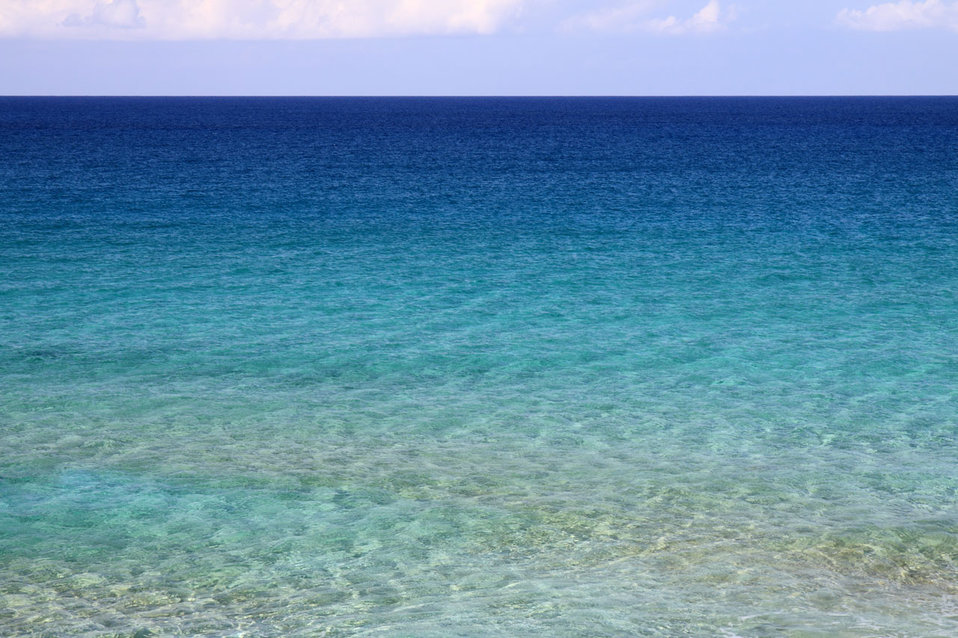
Sea and horizon

Sea surface with horizon.